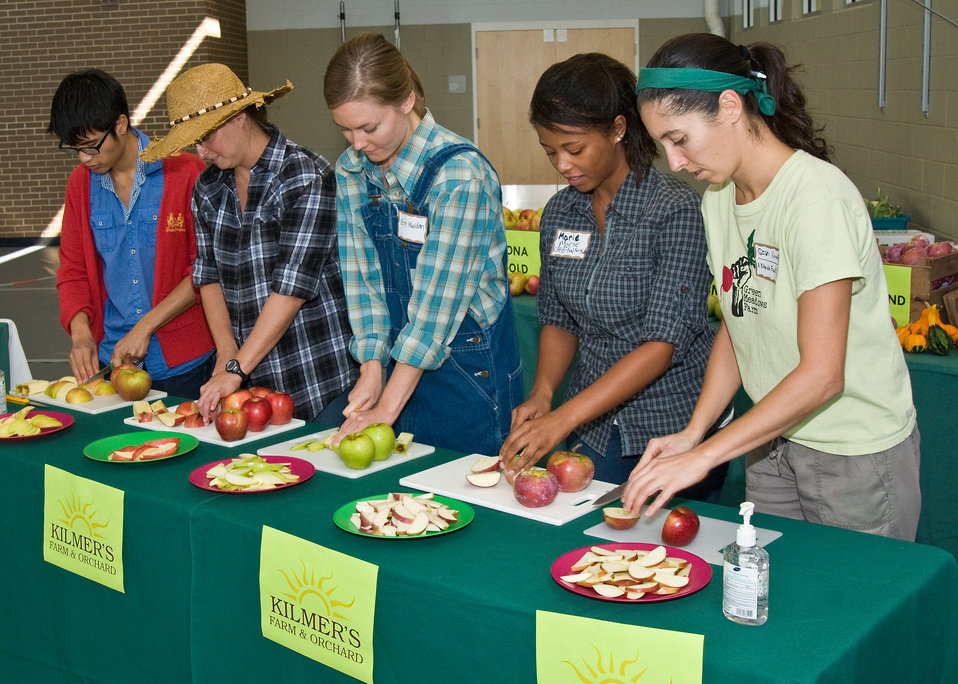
From left: Allen Choung, City Blossoms, Becca Newman, Grover Park Burleigh Farmers Market, Erin Walden, DC Farmers School, Marie Morse, Capitol Area Food Bank and Ibti Vincent, Independent Food Educators, volunteers at the D.C. Farm to School and D.C. School Garden Week held at the Savoy Elementary and Thurgood Marshall Academy shared campus in Washington, DC, Tuesday, October 12, 2010, slice apples supplied by Kilmer’s Farm and Orchard in Berkeley, West Virginia. At the event a Chef’s Competition related to the Iron Chef competition was held where local chef’s and student sous chef’s created healthy, delicious recipes using local apple varieties to be judged by the students themselves. School children and a partnership of community organizations have responded to First Lady Michelle Obama’s goal to end childhood obesity by building school gardens, providing healthier foods in school meals, and helping kids connect with local food and agriculture. USDA Photo 10di1522-6 by Bob Nichols.